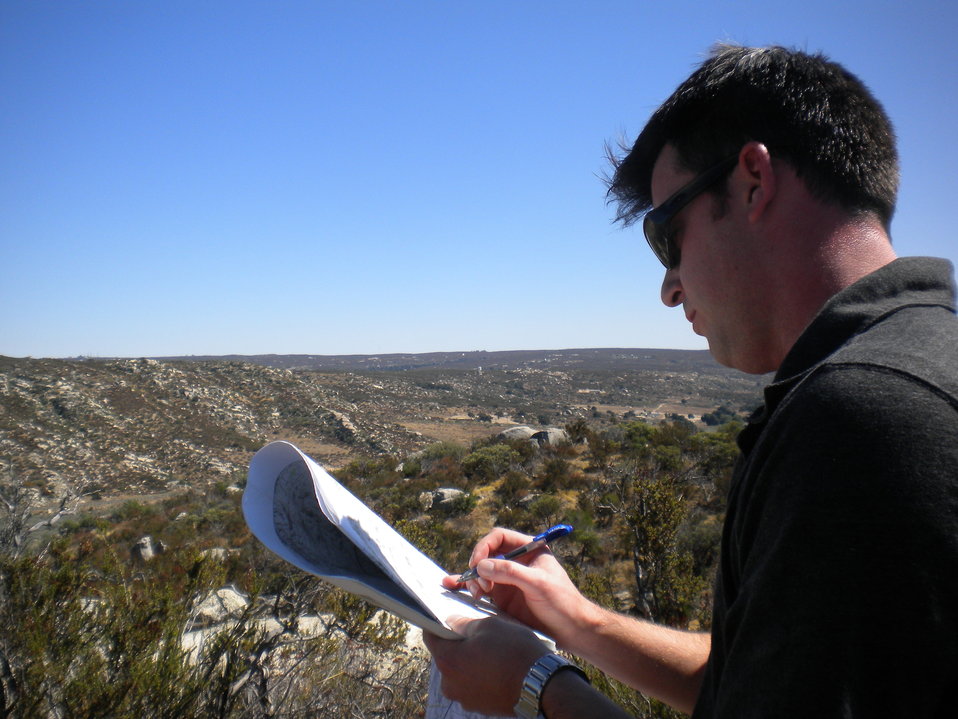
START Team Site Visit in San Diego, California

December 19, 2012 During an Office of Indian Energy Strategic Technical Assistance Response Team (START) site visit on the Campo Indian Reservation in San Diego County, NREL's Alex Dane reviews a site map.